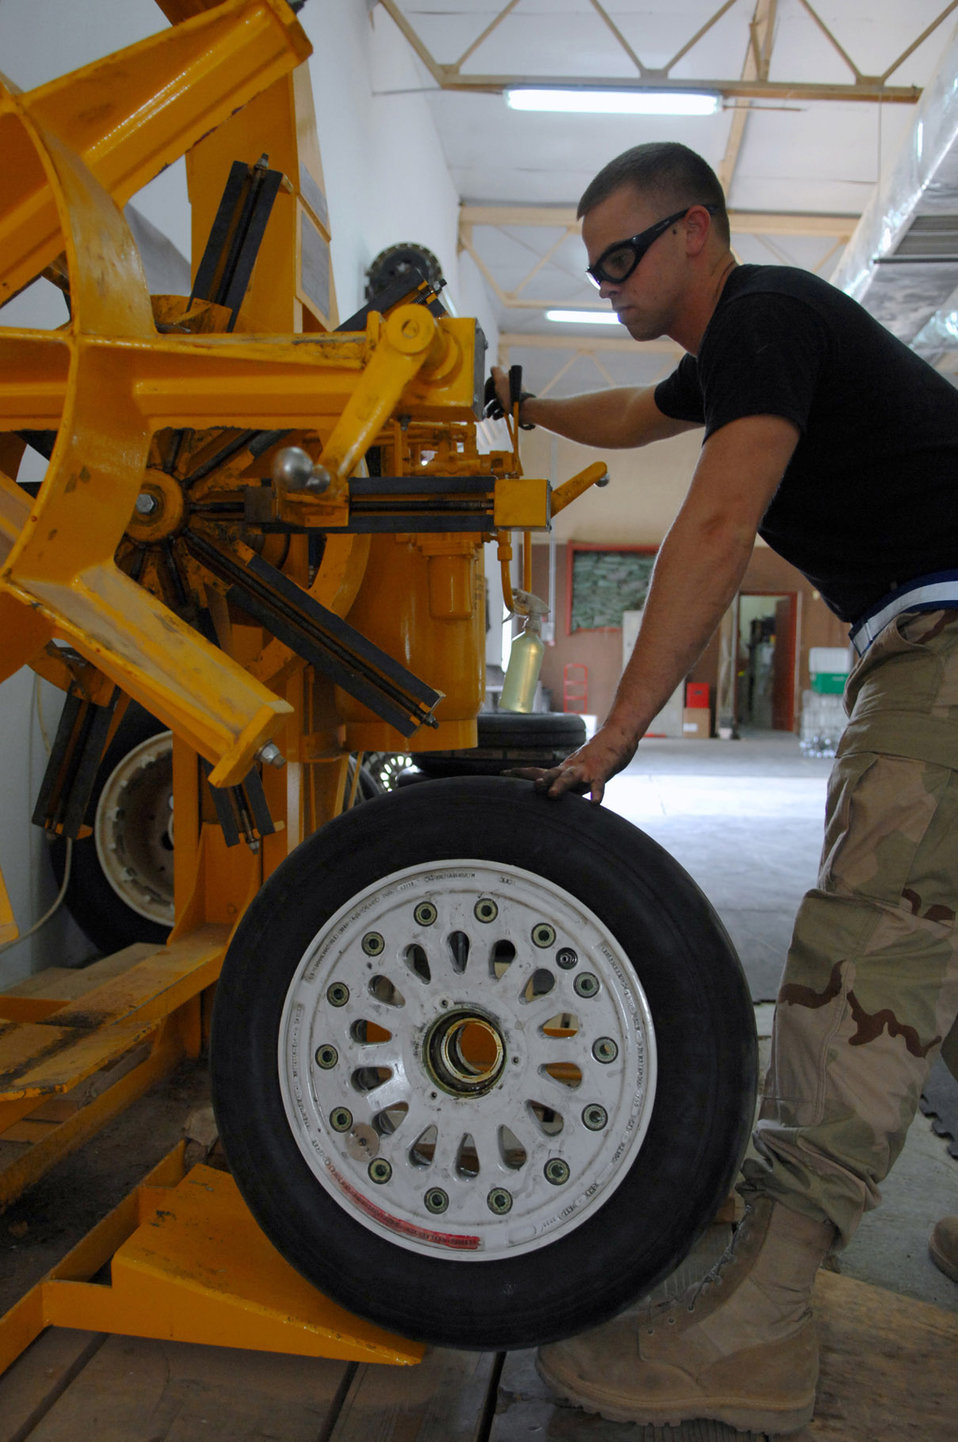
The wheels on the plane

Airman 1st Class Jared Hollers places an F-16 Fighting Falcon's wheel onto a bead breaker that separates the tire from the rim at Balad Air Base, Iraq. Replacing the outer skin of the wheel helps provide the proper traction during landings. Airman Hollers is a 332nd Expeditionary Maintenance Squadron crew chief deployed from Hill Air Force Base, Utah.